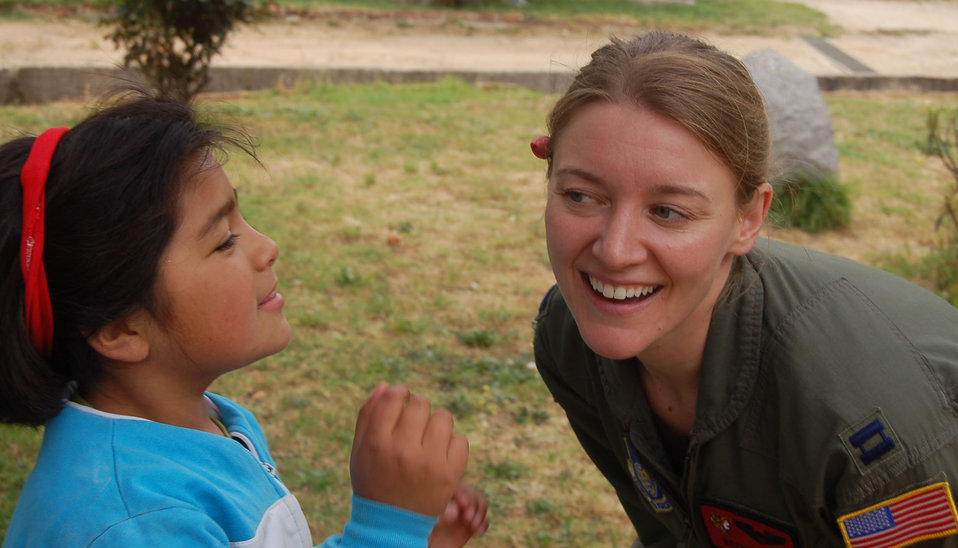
Airmen continue building South American partnerships

Capt. Becky Russo is all smiles after recieving a flower Oct. 31 from a Chilean girl during a visit to ALDEAS SOS orphanage in Quilpu√©, Chile. Captain Russo, a C-17 Globemaster III aircraft commander from the 535th Airlift Airlift Squadron at Hickam Air Base, Hawaii, visited the orphanage while on a community outreach program during Operation Southern Partner, a Twelfth Air Force (Air Forces Southern) led event aimed at providing intensive, periodic subject-matter exchanges in the U.S. Southern Command area of focus.